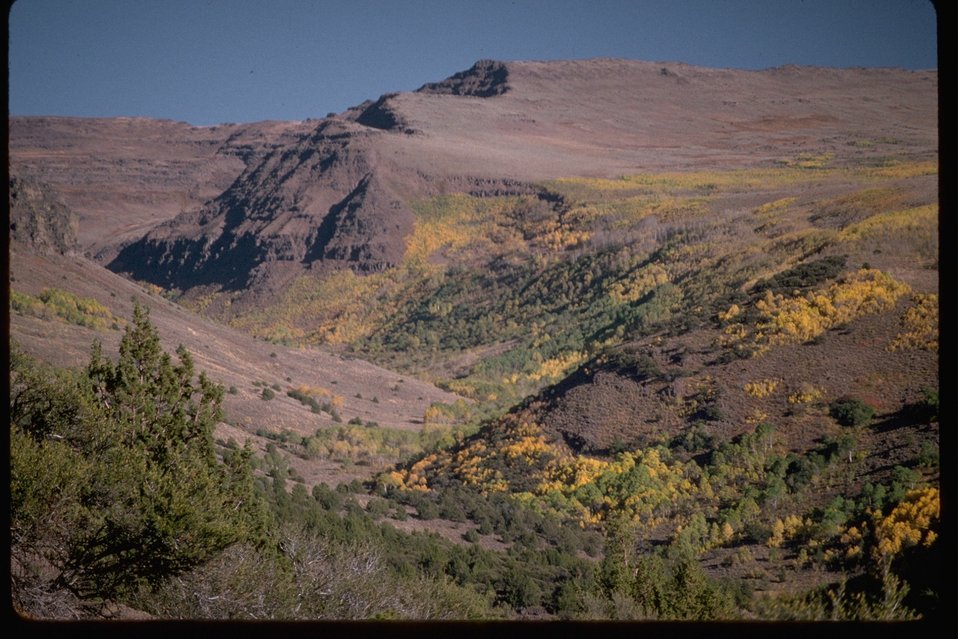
Big Indian Creek and Ankle Mountain area with fall colors, from Steens Loop road back country byway.